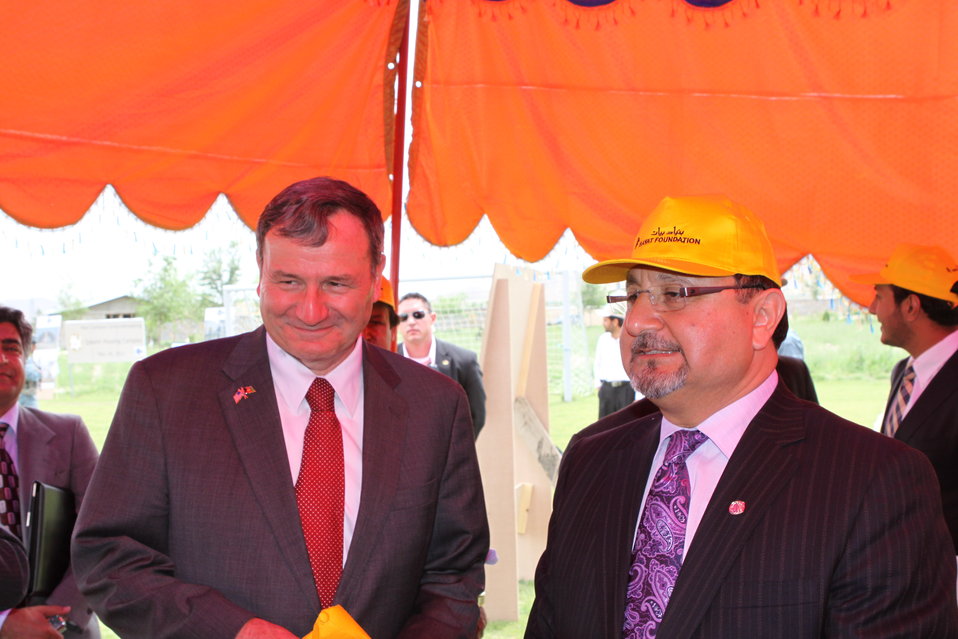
100526 AUAF Graduation 355